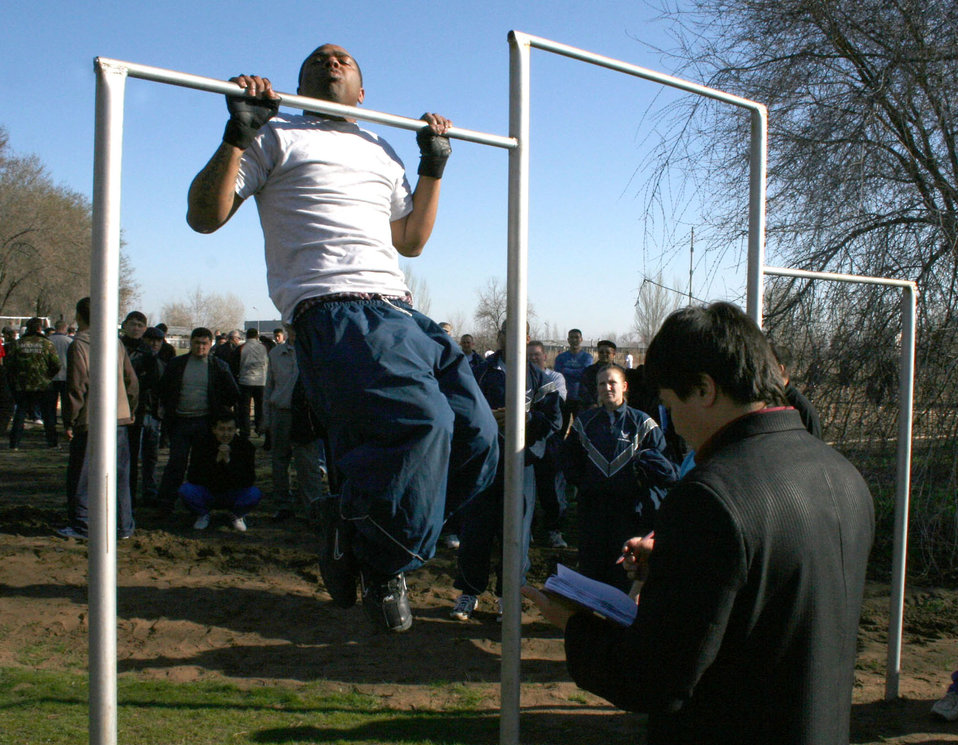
Manas AB and local community forge bonds of friendship

Senior Airman Darrell Davis pounds out 20 pull-ups in a Kyrgyz sports day honoring Revolution Day Thursday, March 23, 2006. Manas International Airport Secretary of Security, Mamyrov Nadybek, invited the Airmen to participate in the games as a mark of friendship and mutual respect. The day included races, tournaments and strength competitions, many unfamiliar to the American Airmen. Airman Davis is with the 376th Expeditionary Civil Engineer Squadron.